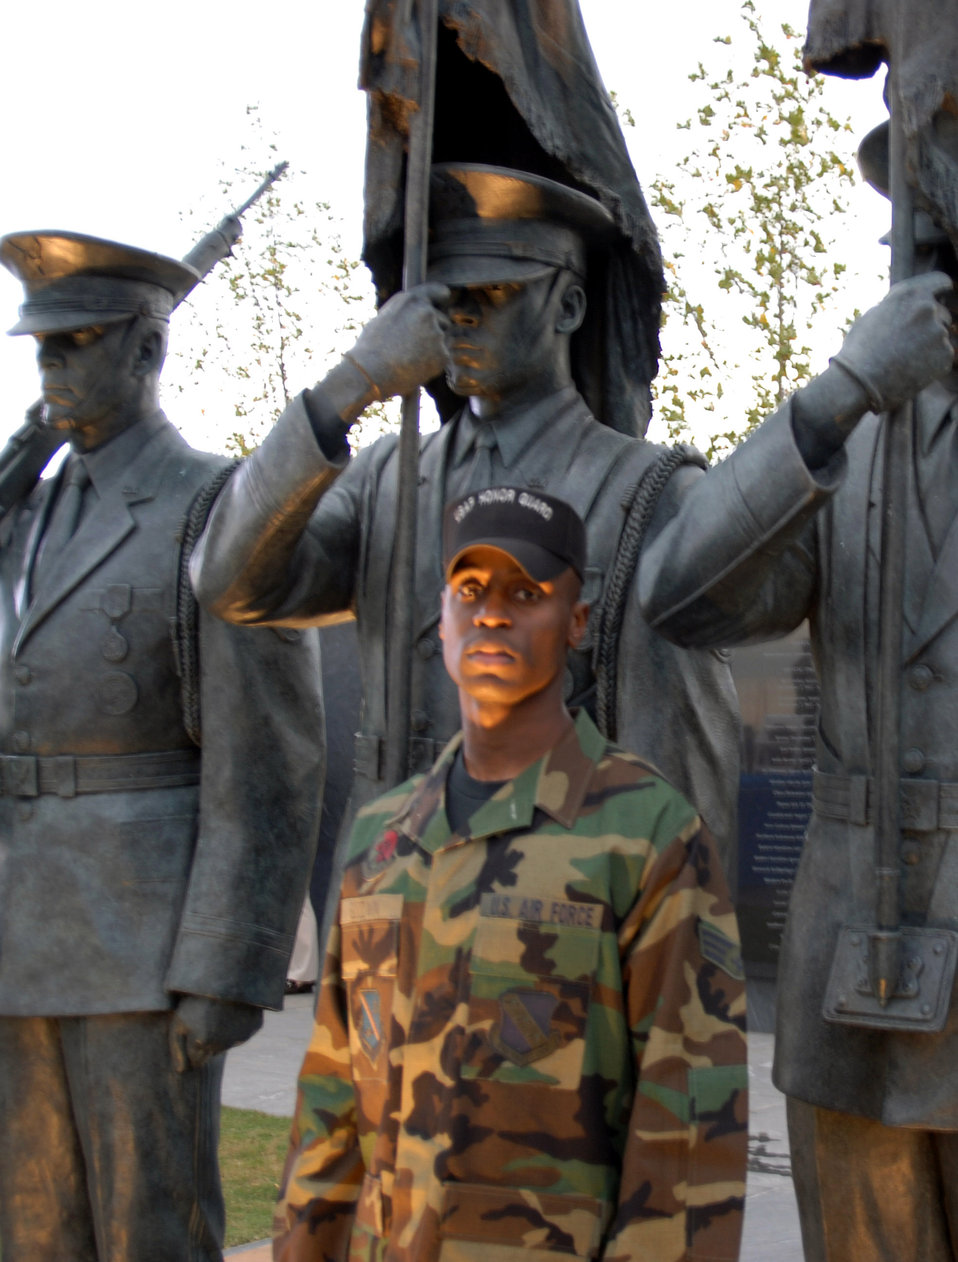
Airman a 'model' honor guard member

Senior Airman Michael Goodwin stands in front of the Air Force Honor Guard statue he was used as a model for, which now resides at the Air Force Memorial.